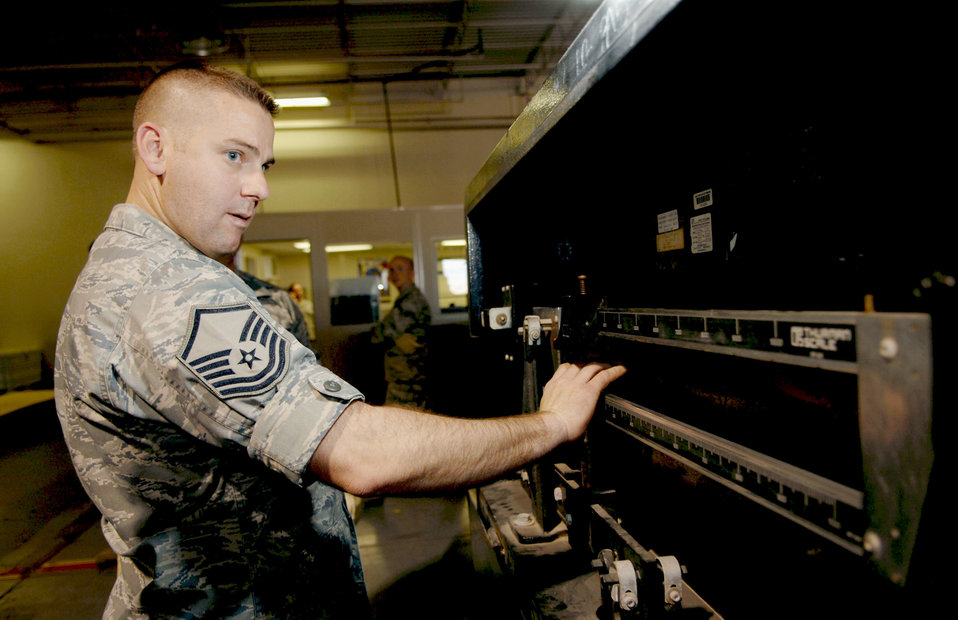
Team heads to Chile for air show, but not empty-handed

Master Sgt. Daniel Keene weighs a relief package that was delivered to Chile March 17, 2010, at Holloman Air Force Base, N.M. The relief package consisted of more than 5,000 pounds of tools and supplies to assist in the relief operations in Chile. The South American nation was hit by an 8.8 magnitude earthquake, Feb. 27, 2010. Sergeant Keene is the 49th Logistics Readiness Squadron vehicle fleet manager.